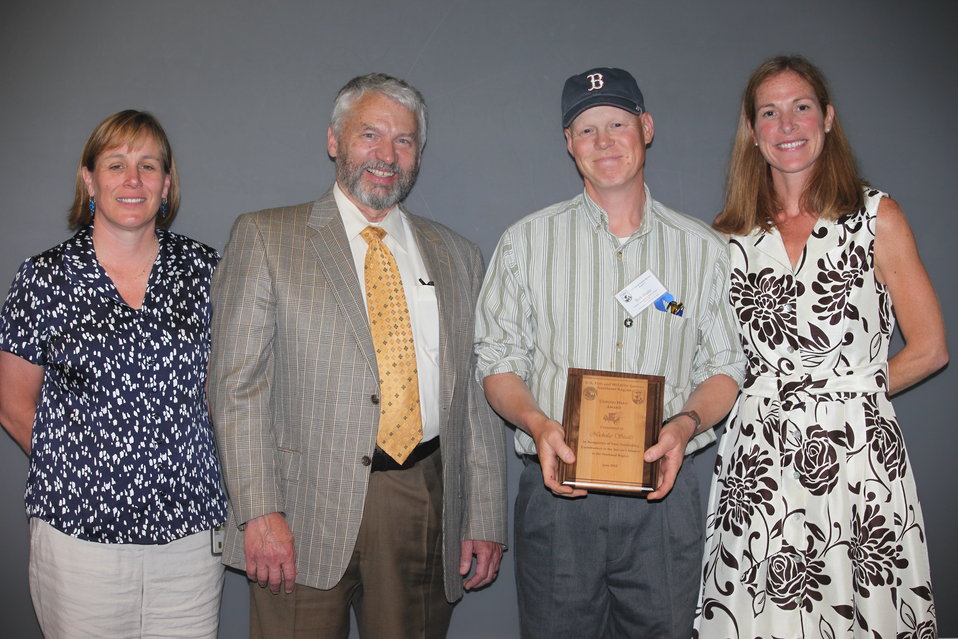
Nicholas Staats of Lake Champlain Fish and Wildlife Resources Offices recieved the Region 5 Unsung Hero Award.
From left to right: Deputy Regional Director Deb Rocque, Deputy Director Rowan Gould, Nicholas Staats and Regional Director Wendi Weber